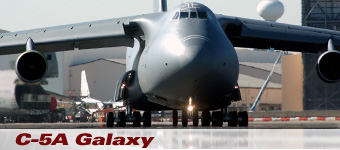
C-5A Galaxy history spotlight graphic .